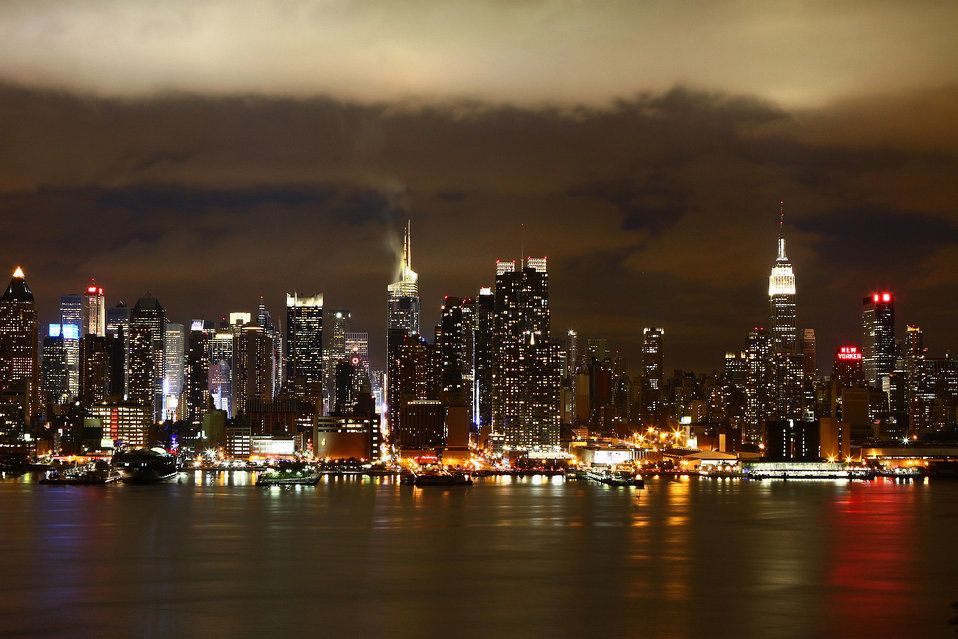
Panorama

The city which never sleeps.